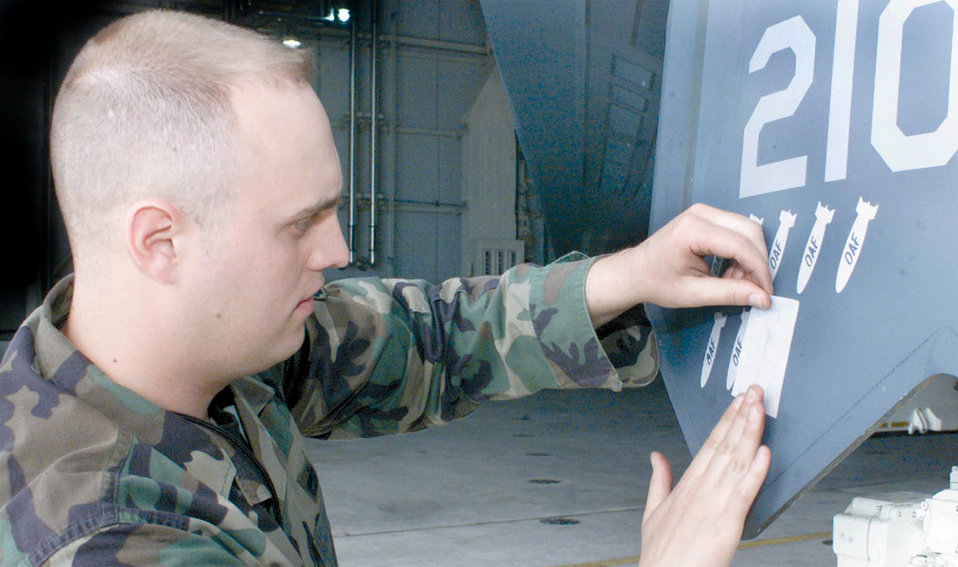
One more mission

WHITEMAN AIR FORCE BASE, Mo. -- Staff Sgt. David Rohde, a crew chief here, applies an Operation Iraqi Freedom decal to the B-2 Spirit of Arizona March 31. Lt. B-2 crew chiefs apply a new decal for each Operation Iraqi Freedom missions flown by their aircraft.